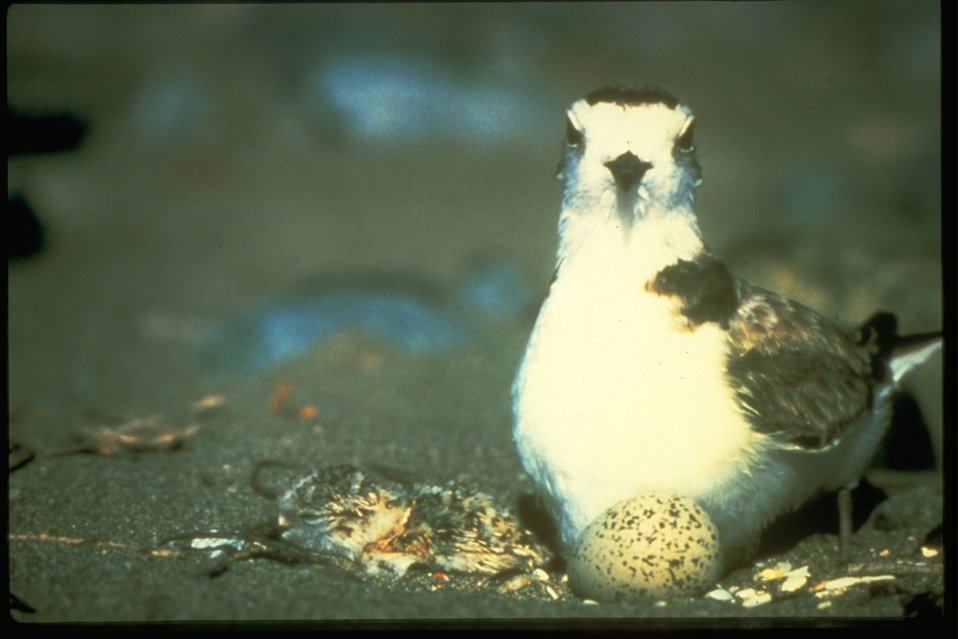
A Snowy Plover with a newborn and an egg.